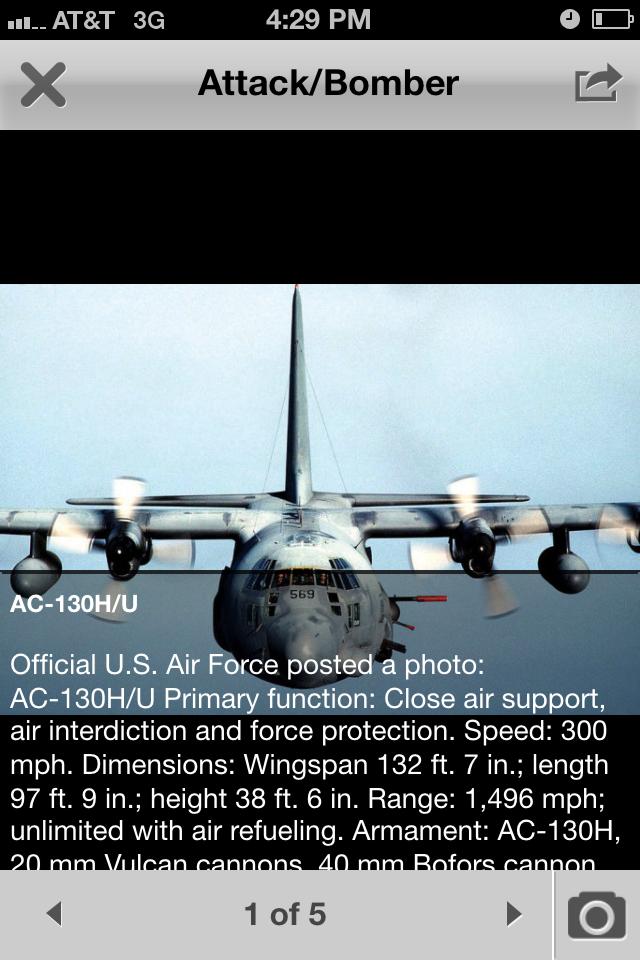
AFLINK mobile application now available

The Air Force Inventory section of the AFLINK mobile application has photographs of aircraft and other Air Force hardware. It also gives users historical reference and up-to-date details about each piece of equipment.